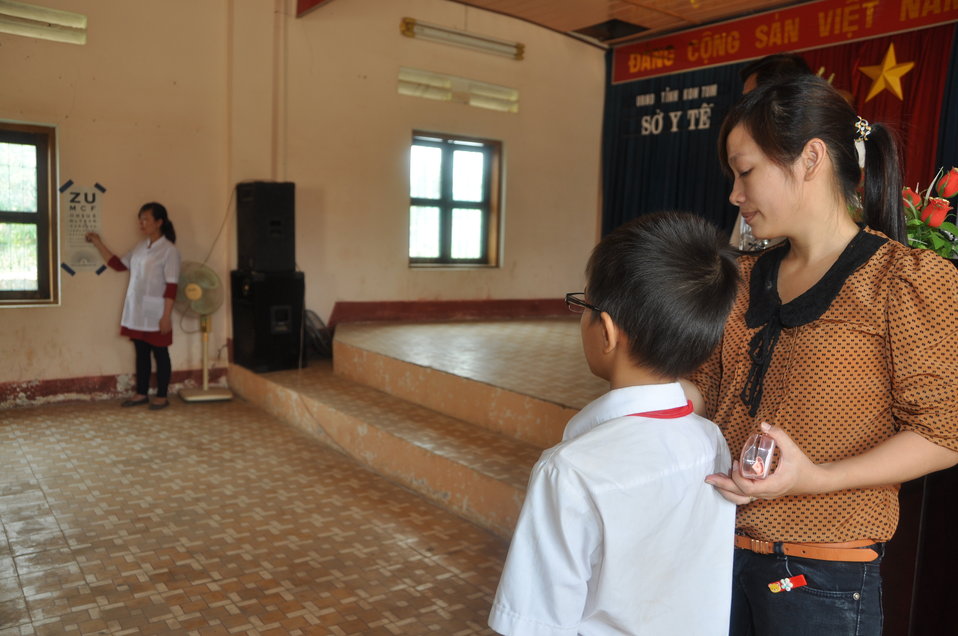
School children in Dak To, Kon Tum Province, receive eyeglasses under a program supported by USAID and partners HKI and World Learning